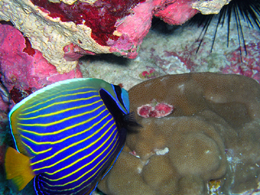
Anglefish and Hump Coral - Howland Island NWR

There is a total of 109 species of stony coral in the Howland Islands NWR.